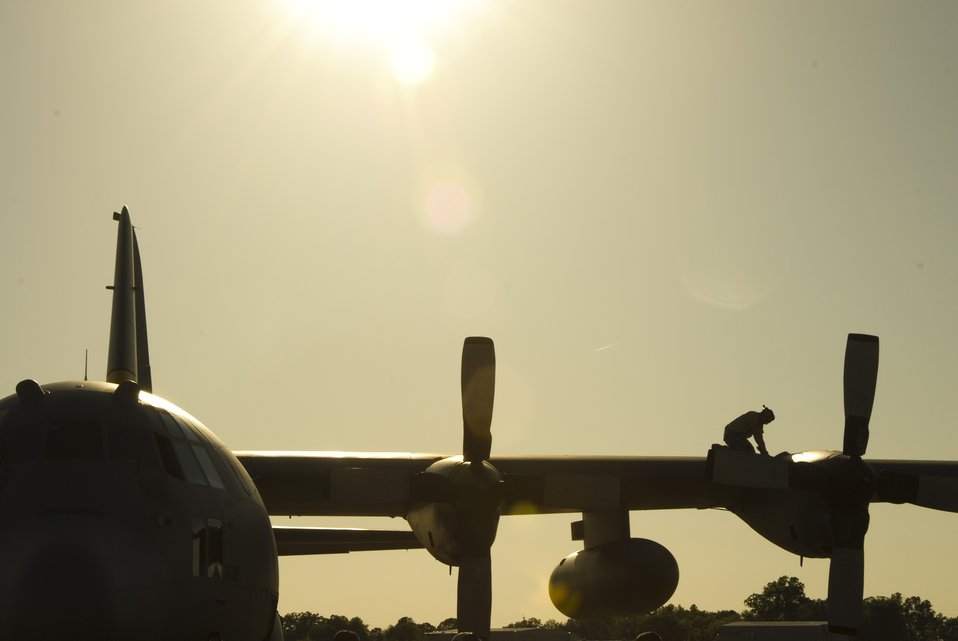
I've got to wear shades

An Airman works on a returning C-130 Hercules April 28, 2010, at the Donaldson Airport in Greenville, S.C. The C-130 aircrew began annual training and certification on the Modular Airborne Fire Fighting System in Greenville from April 26 to April 30.